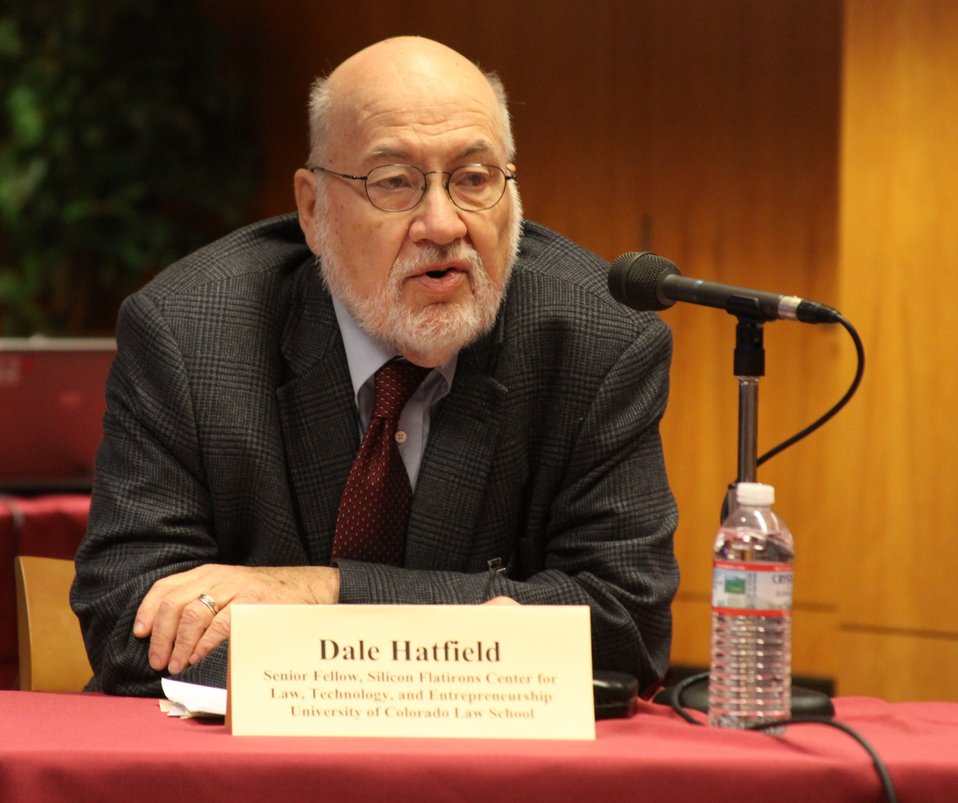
March 27, 2013 Gigabit City Challenge: Broadband Networks Workshop Panel 2: Becoming A Gigabit Community, moderated by Dale Hatfield, Senior Fellow, Silicon Flatirons Center for Law, Technology, and Entrepreneurship, University of Colorado Law School